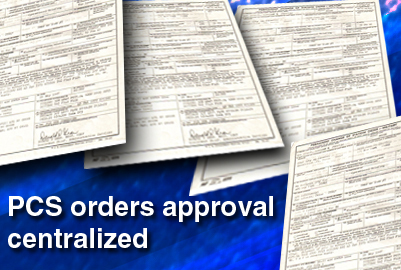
PCS Orders